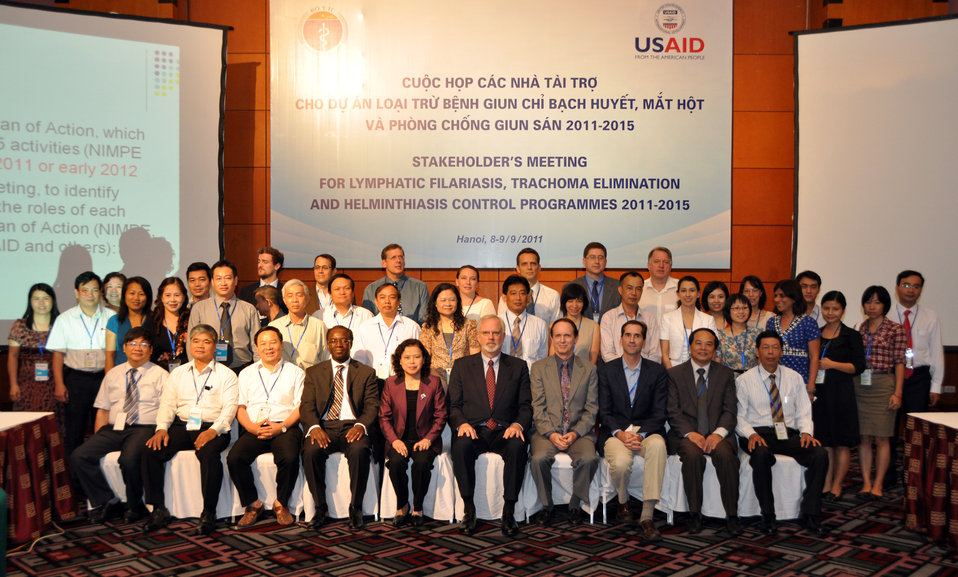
USAID supports Vietnam's efforts to control and eliminiate neglected tropical diseases: Workshop Sept. 8, 2011